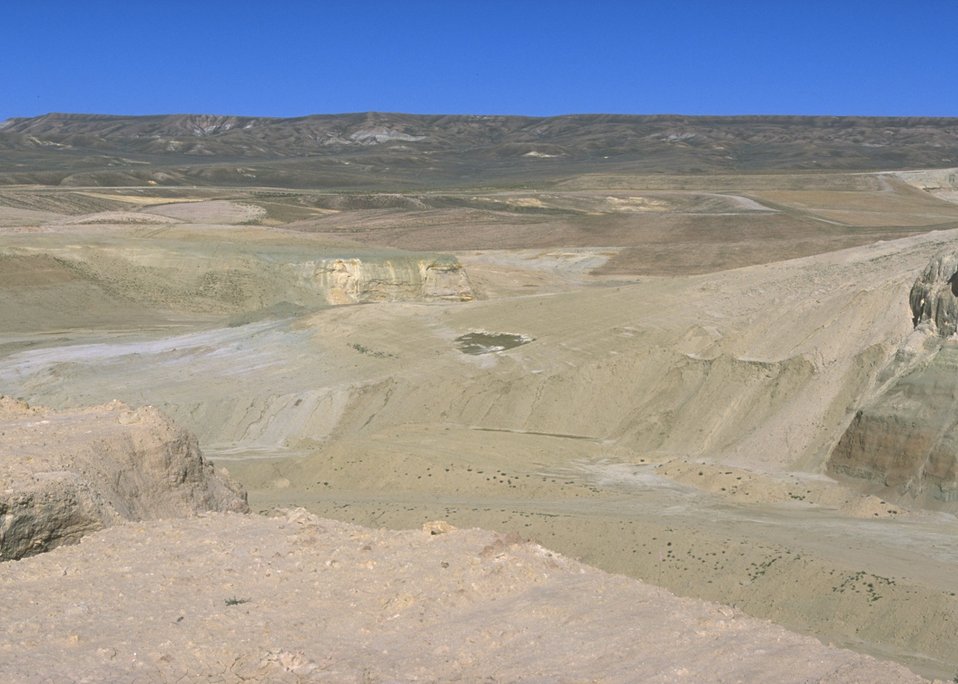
Gas Hill Abandoned Mine Lands in various stages of rehabilitation, Lander Field Office.